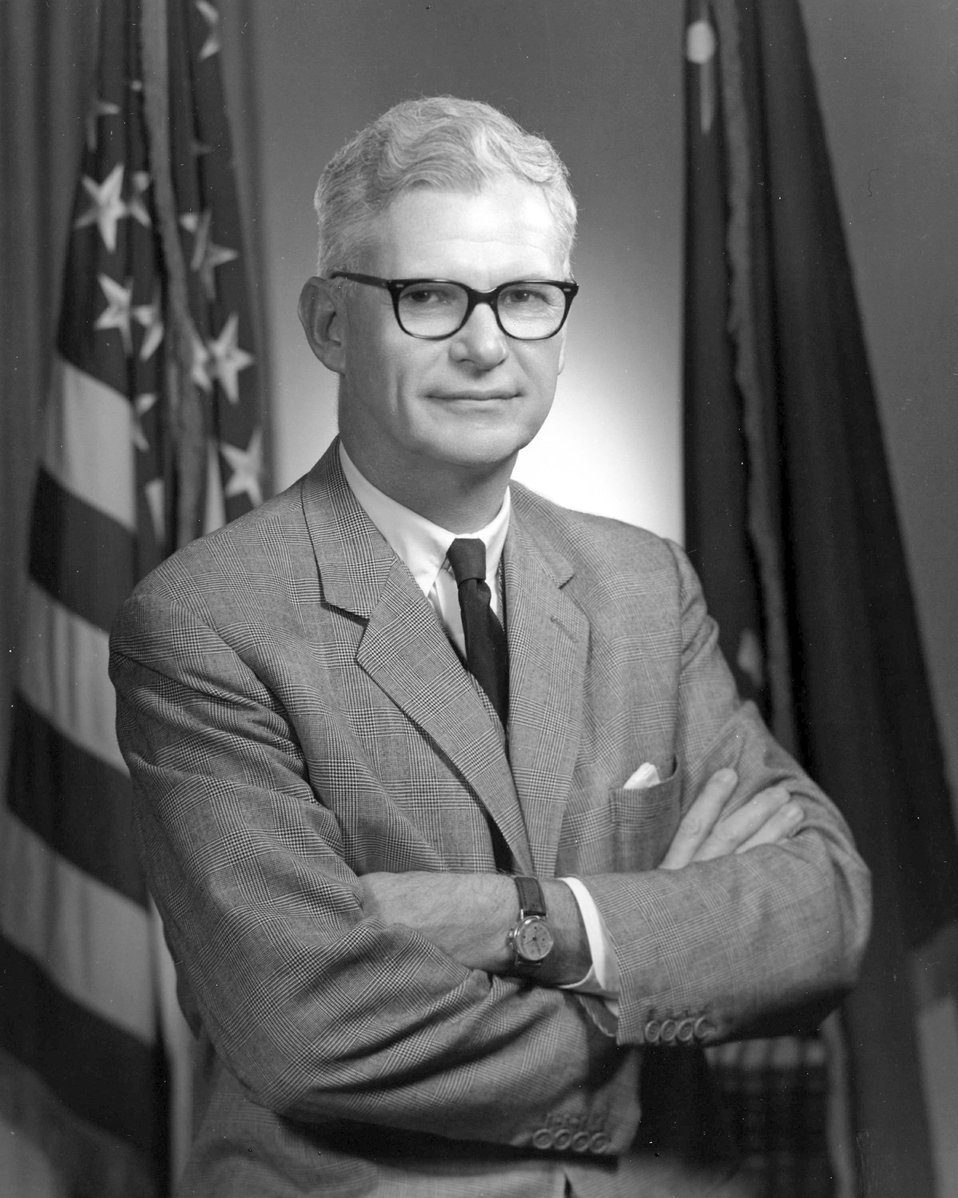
Former Secretary of the Air Force Seamans dies

Former Secretary of the Air Force Dr. Robert C. Seamans Jr. died June 28 at his home in Beverly, Mass. He was the ninth secretary of the Air Force.